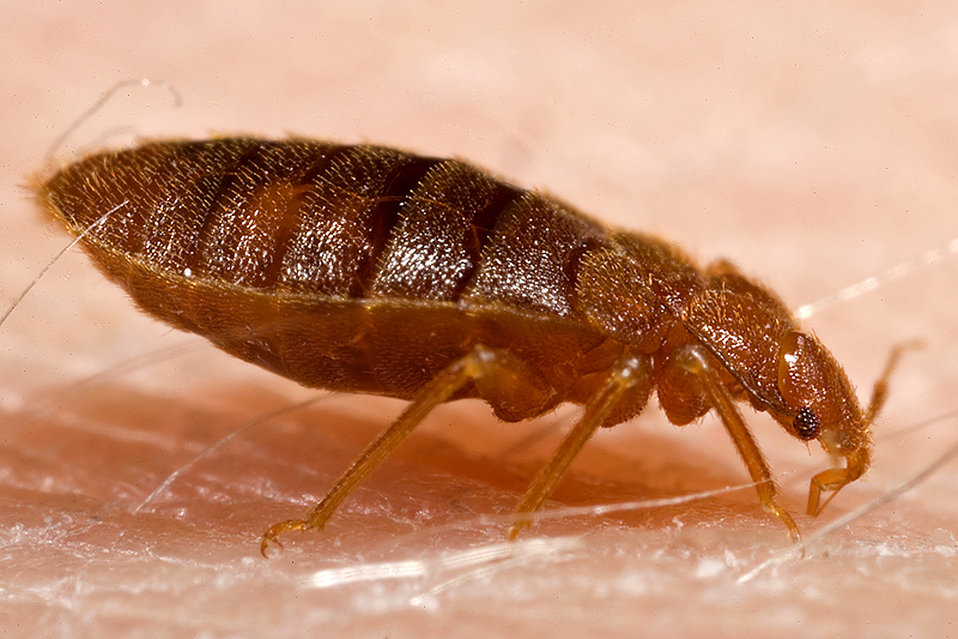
This 2006 photograph depicted a lateral view of an adult bedbug, Cimex lectularius, as it was in the process of ingesting a blood meal from the arm of a 'voluntary' human host.Bedbugs are not vectors in nature of any known human disease. Although some disease organisms have been recovered from bedbugs under laboratory conditions, none have been shown to be transmitted by bedbugs outside of the laboratory. Bedbug bites are difficult to diagnose due to the variability in bite response between people, and due to the change in skin reaction for the same person over time. It is best to collect and identify bedbugs to confirm bites. Bedbugs are responsible for loss of sleep, discomfort, disfiguring from numerous bites and occasionally bites may become infected.